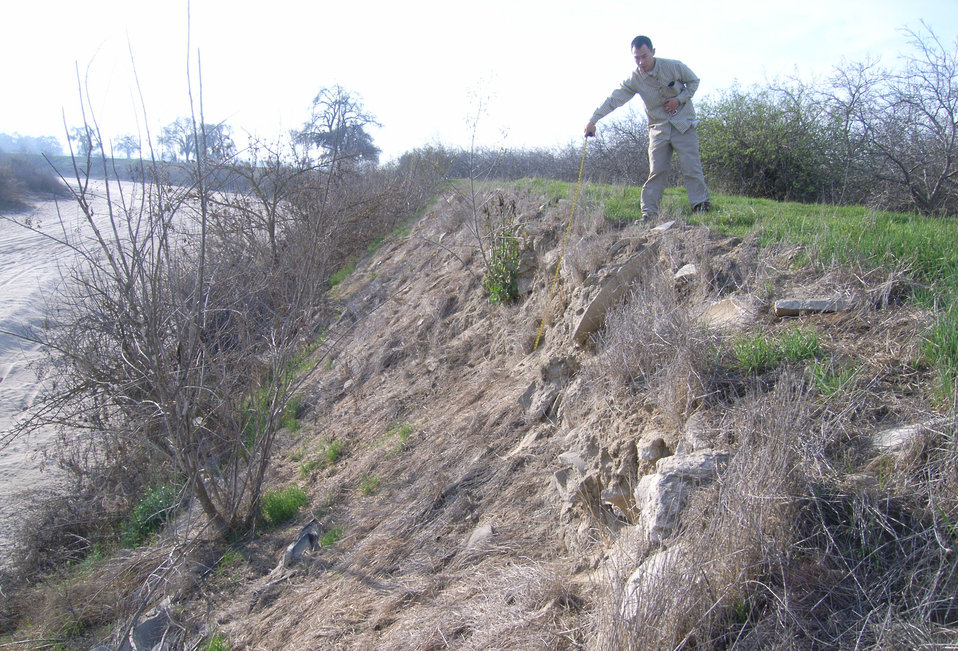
Erosion on Kings River levee

Levee erosion in the Fresno County, Calif., area, shown during a levee inspection in 2012. The U.S. Army Corps of Engineers inspects levees in its Rehabilitation and Inspection Program to ensure levees don’t pose an unacceptable risk to lives and to provide levee managers and residents with detailed information on the condition of levees to help them make informed decisions about safety.